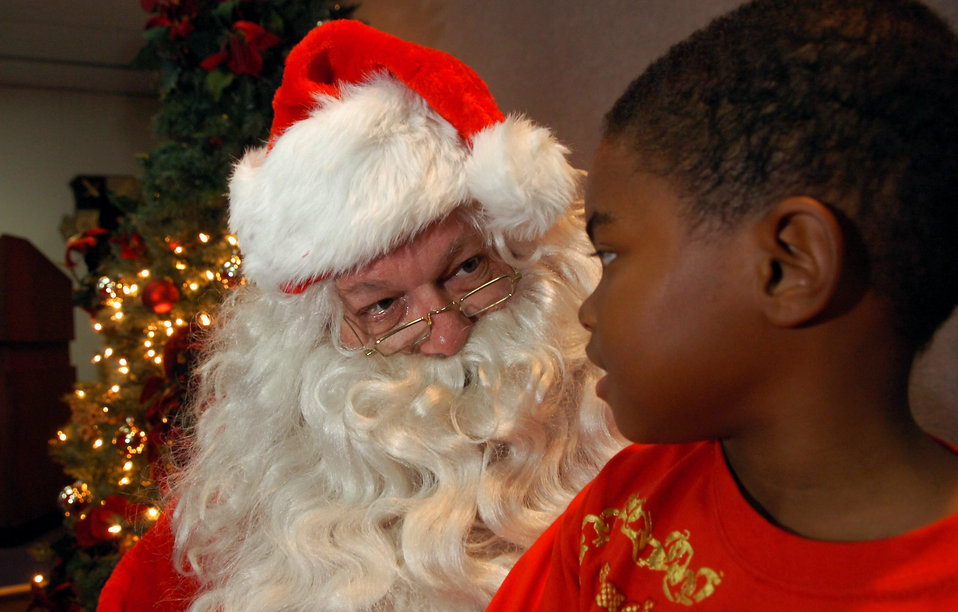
Have you been good?

Santa visits with a child at open house Dec. 22 for the Air Force ISR Agency and Joint Information Operations Warfare Command at Lackland Air Force Base, Texas. During the event, family members could learn more about the agency's mission through briefings while participating in holiday activities.